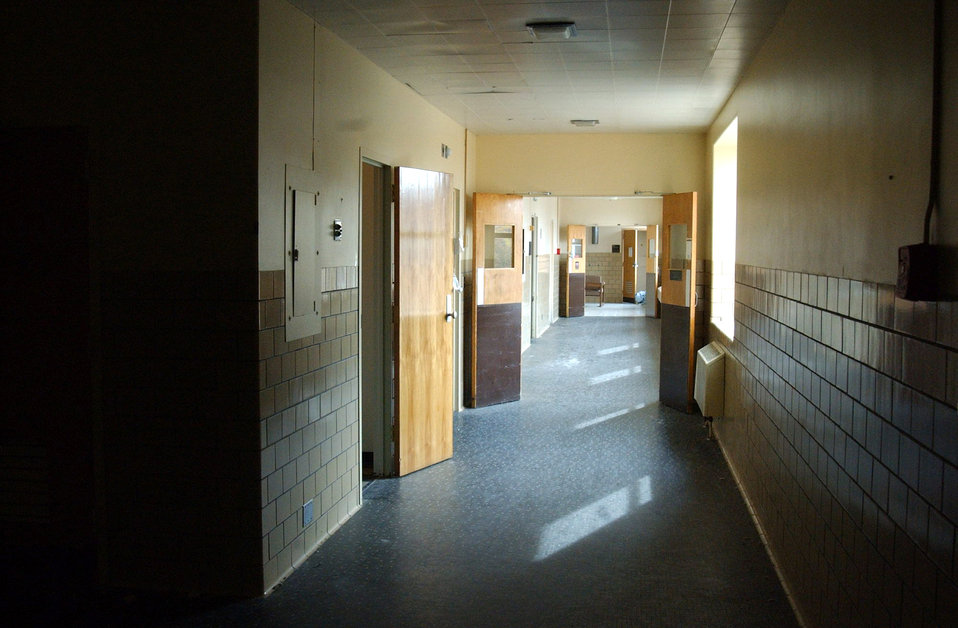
New York Airmen provide medical equipment for refugees

PLATTSBURGH, N.Y. -- Empty hallways and rooms are all that remain of the 380th Medical Group's hospital at the closed Air Force base here, but equipment from the hospital will see a new life in Nicaragua.